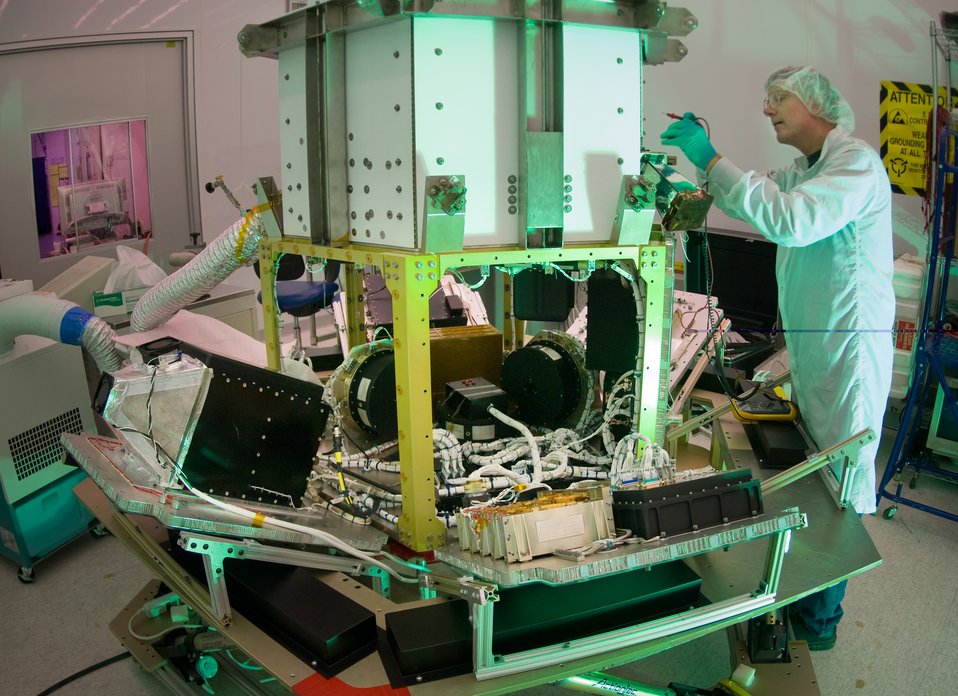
TacSat-3 Preparation

Martin Leahy performs voltage and continuity tests on a tactical satellite, known as Tactical Satellite-3, at the Space Vehicle Directorate at the Air Force Research Laboratory, Kirtland Air Force Base, N.M. The satellite is scheduled to be launched in October. Mr. Leahy is a field engineer with ATA Aerospace.